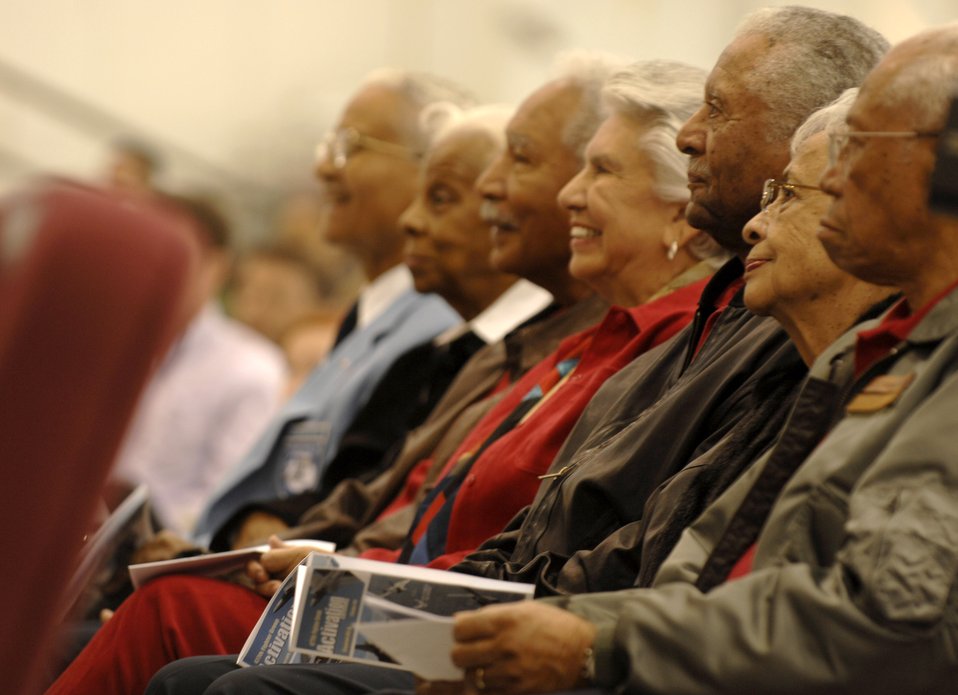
Air Force Reserve stands up first F-22 Raptor unit

Several original Tuskegee Airmen and their spouses attended the 477th Fighter Group activation ceremony Oct. 2 at Elmendorf Air Force Base, Alaska. These famous African-American aviators are known for their unrivaled combat skills, earing two Presidential Unit citations during World War II. The 477th FG's heritage is rooted in the 477th Bombardment Group, a Tuskegee Airmen unit from the 1940s. The newly designated unit is the only Reserve F-22 Raptor unit in the Air Force.